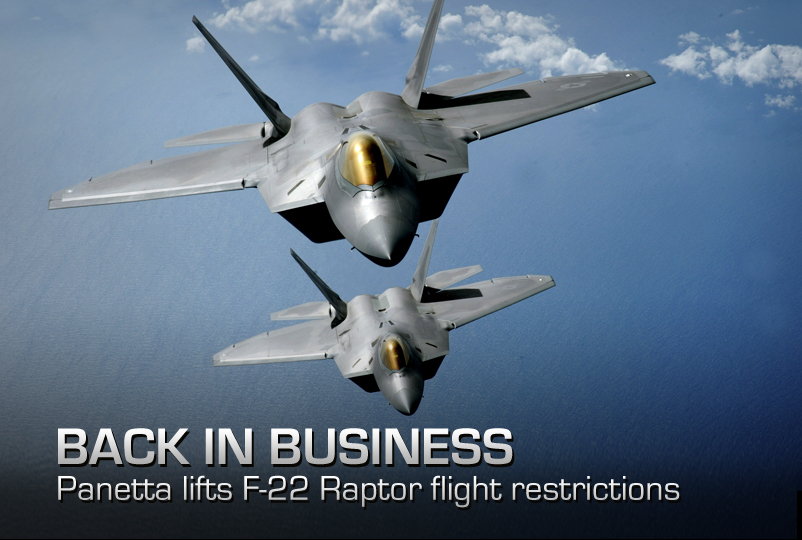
Back in Business